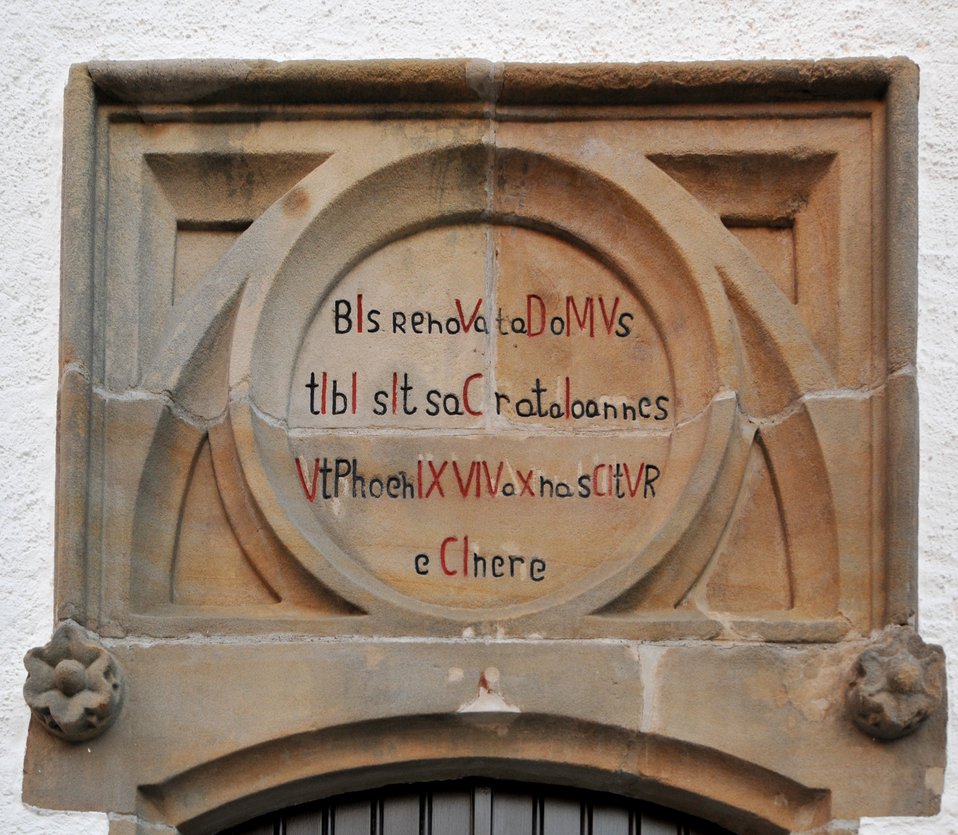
Lëtzebuergesch: De Chronogram (1859) iwwer der Entree vun der Kierch zu Elveng.